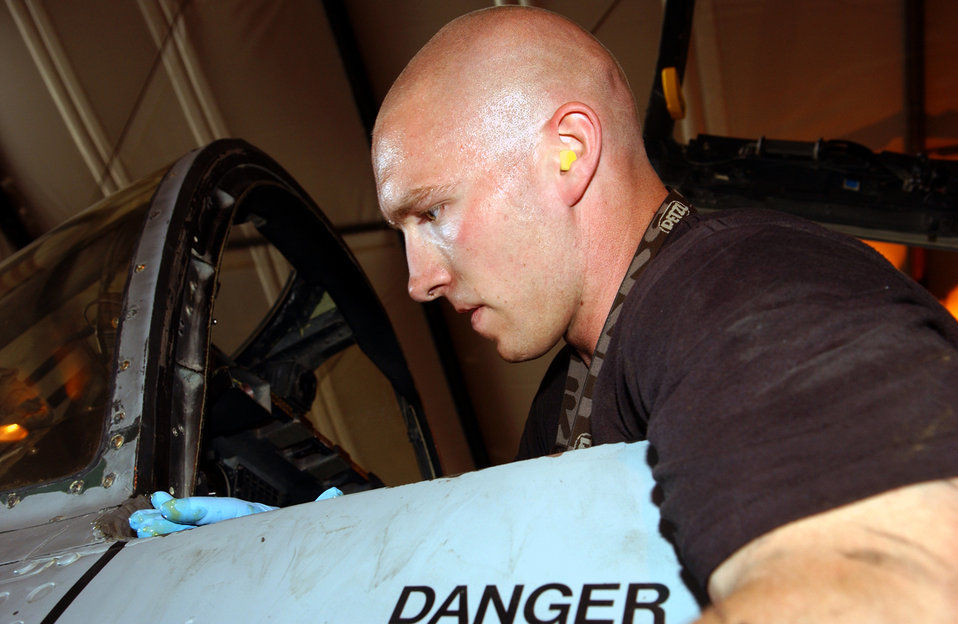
Phase maintenance

BAGRAM AIR BASE, Afghanistan -- Staff Sgt. Bruce Ginkel applies sealant to an A-10 Thunderbolt II canopy during phase maintenance. The sealant helps maintain cockpit pressurization. Each A-10 here is taken apart after 400 flying hours so maintainers can perform preventative maintenance. Sergeant Ginkel is assigned to the 355th Expeditionary Aircraft Maintenance Squadron here.